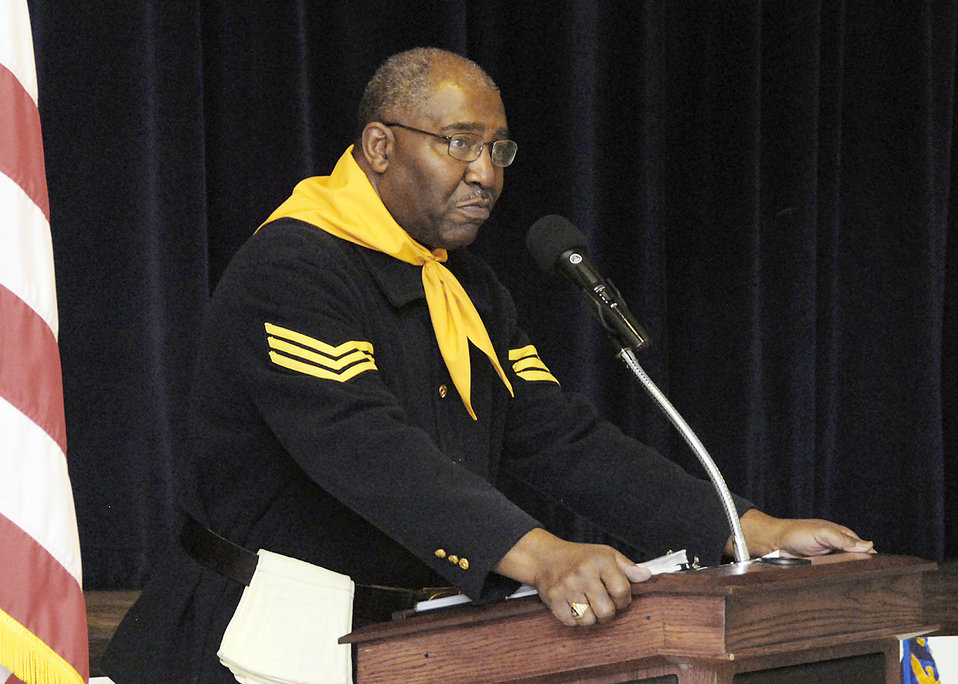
Buffalo Solider legacy shared at Sheppard

Trooper Fred Gray speaks at the Living Legends Banquet Museum Feb. 19, 2010, at the Sheppard Air Force Base. Trooper Gray is the former president of the Lawton-Fort Sill Chapter of the 9th and 10th Horse Cavalry Association of the Buffalo Soldiers.